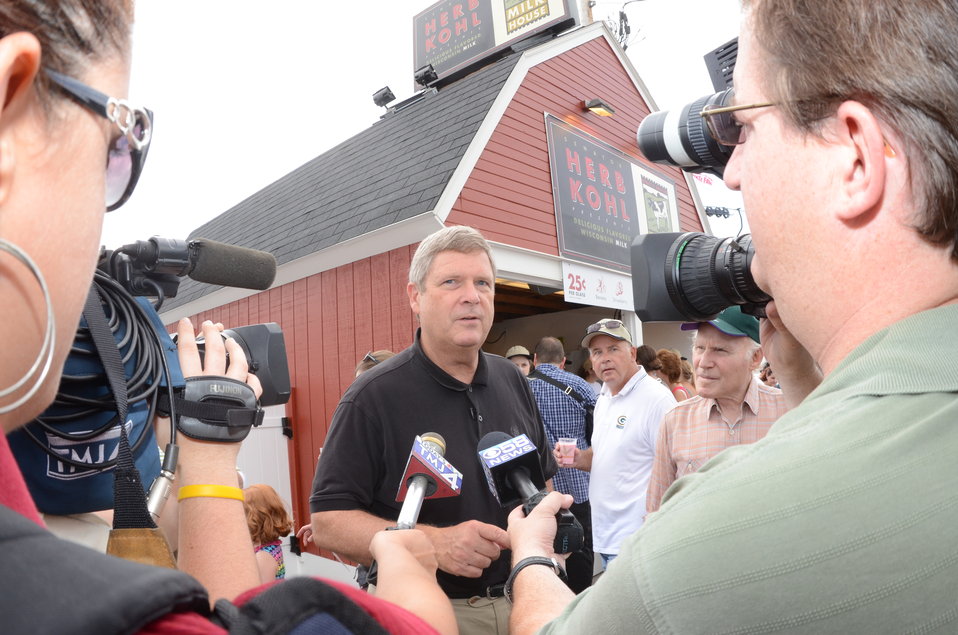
.Agriculture Secretary Tom Vilsack speaking with the press at the Wisconsin State Fair in West Allis, WI, on Thursday, August 4, 2011, USDA Photo by Lance Cheung.